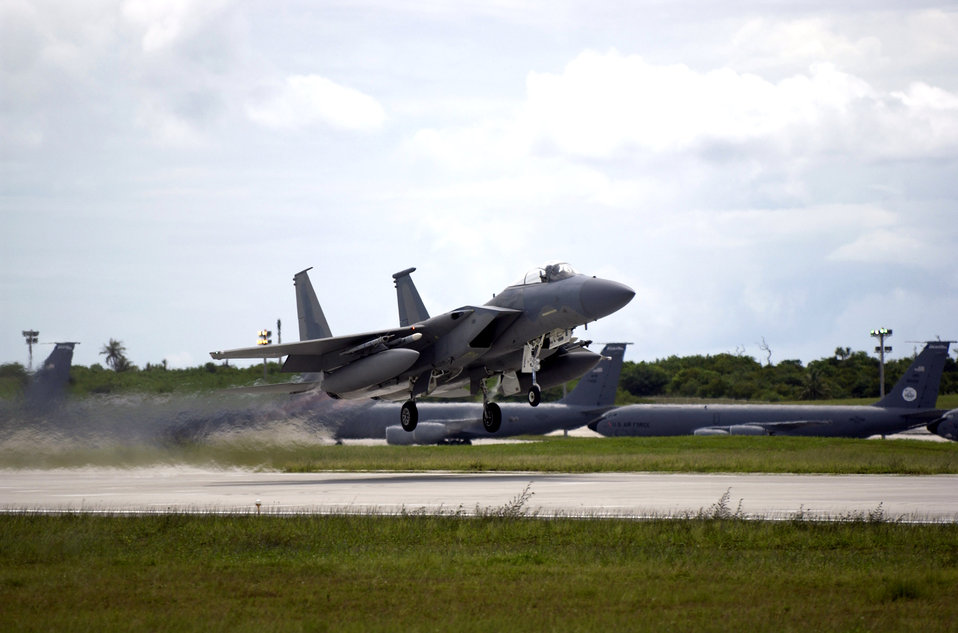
Providing a Valiant Shield

An F-15 Eagle takes off during Exercise Valiant Shield Aug. 8 from Andersen Air Force Base, Guam. Valiant Shield is an exercise that focuses on integrated joint training and interoperability among U.S. military forces while responding to a range of mission scenarios. Held in the Guam operating area, the exercise includes 30 ships, 280 aircraft and more than 20,000 servicemembers from the Navy, Air Force, Marine Corps and Coast Guard. The F-15 is assigned to the 44th Fighter Squadron from Kadena Air Base, Japan.